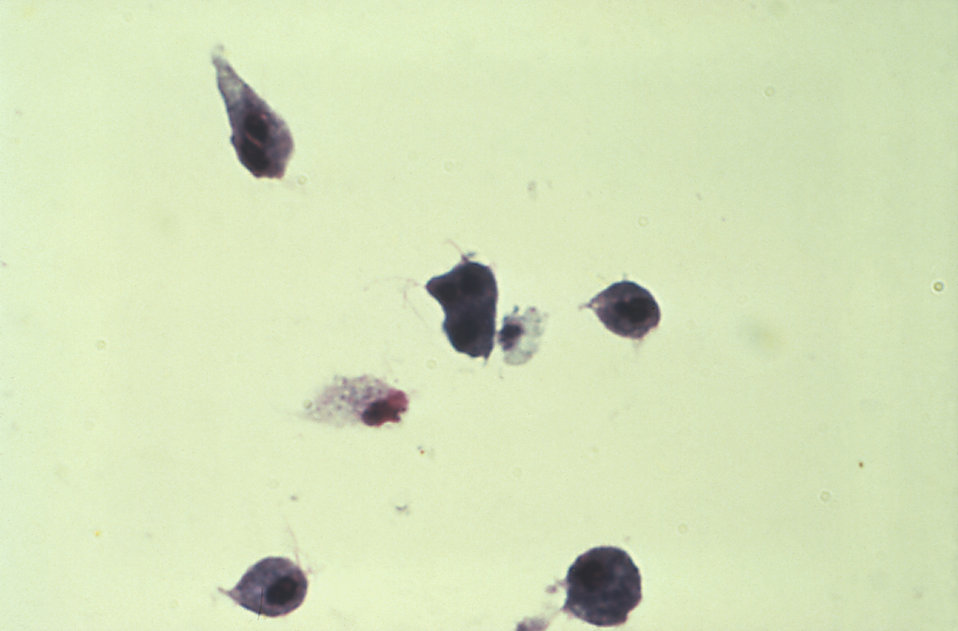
This Giemsa-stained micrograph depicts Trichomonas vaginalis protozoa from a laboratory culture.